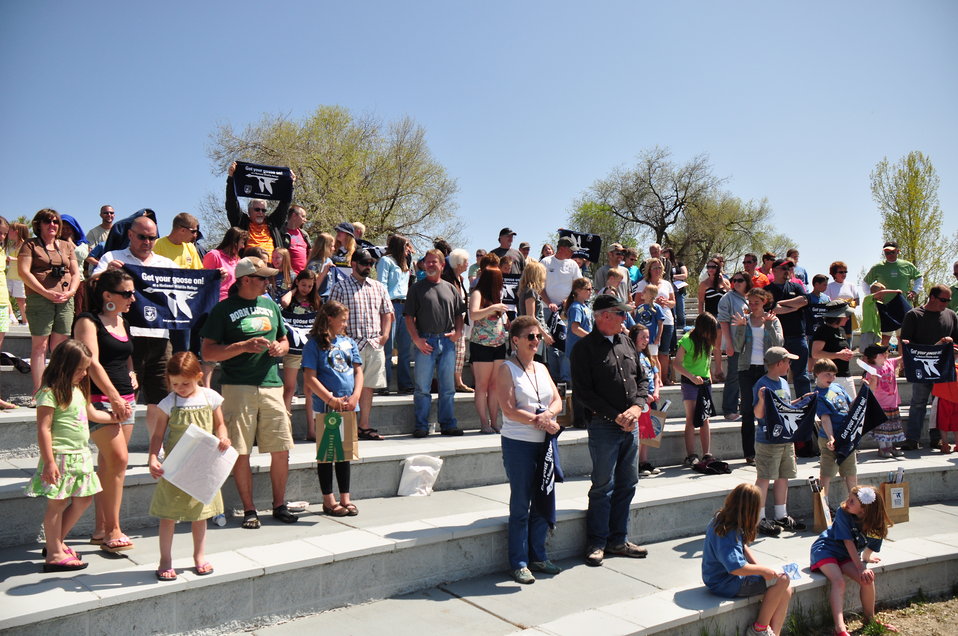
Get Your Goose On!!!

More than 100 people attended the 2012 Montana Junior Duck Stamps award ceremony. The folks pictured here posed with their towels as a videographer captured footage of them screaming, in unison, 'Get Your Goose On!'